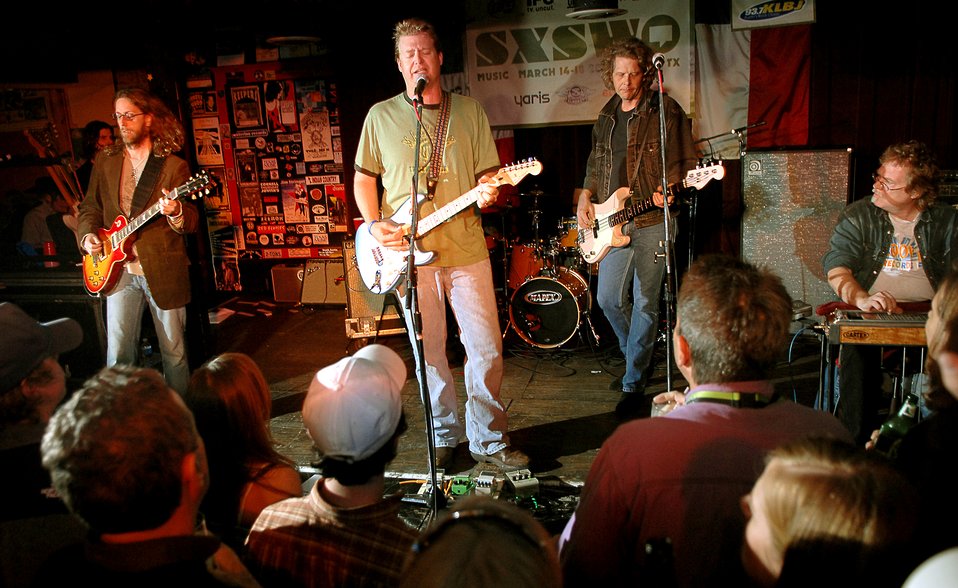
Country artist Robison eager to entertain in Iraq, Kuwait

Country music artist Charlie Robison and his band play for a packed house during a concert at the South by Southwest concert series March 16 in Austin, Texas. Mr. Robison will be entertaining deployed servicemembers in Iraq and Kuwait, until March 27, as part of an Armed Forces Entertainment show.